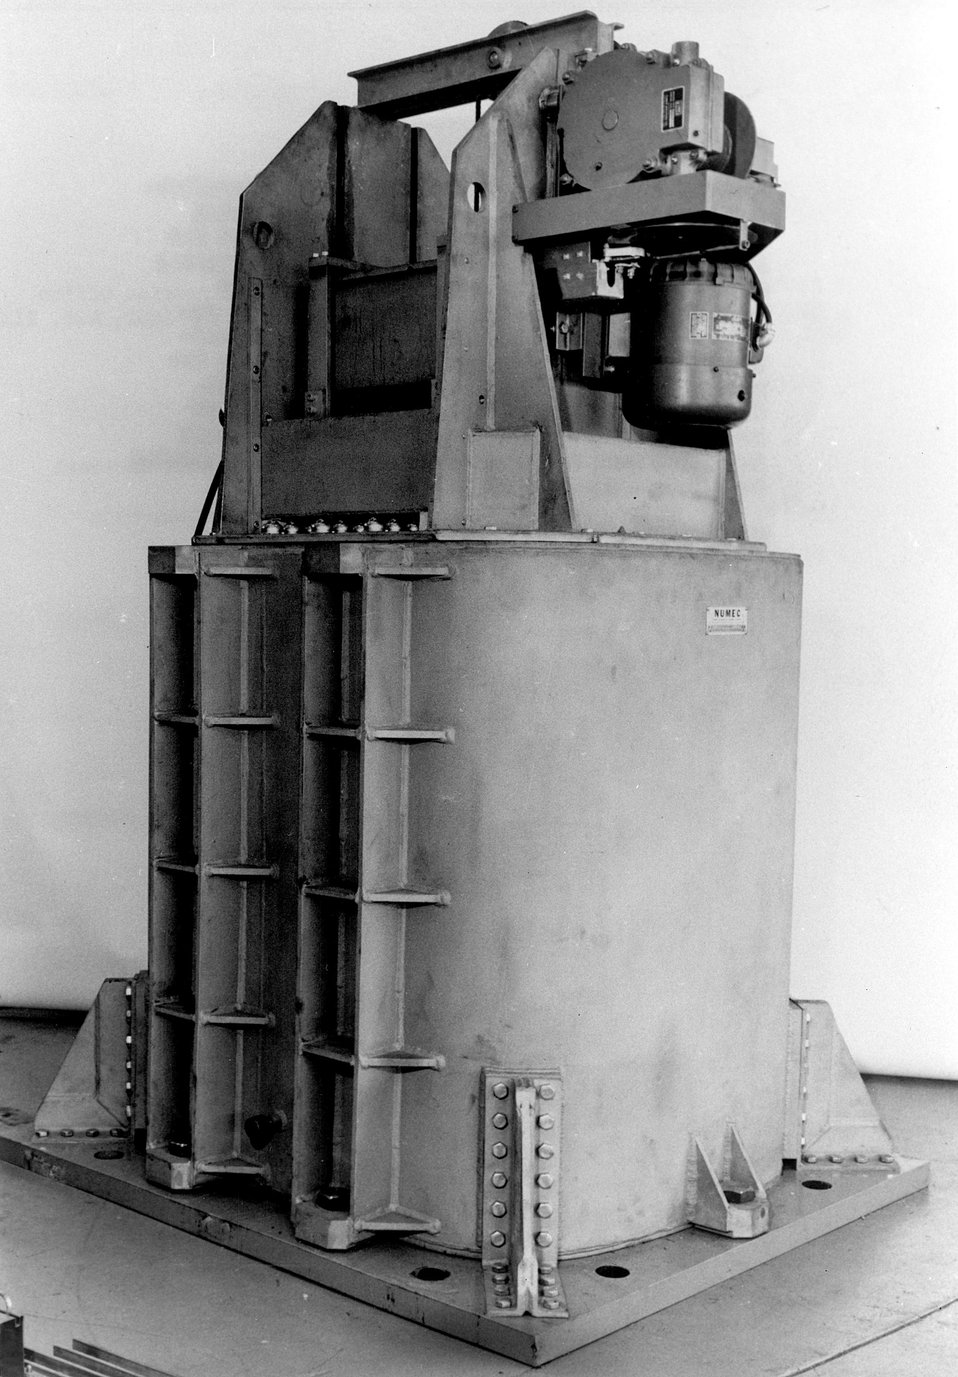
The feasibility of irradiating fish as a means of extending the commercial shelf-life has been demonstrated and the Food and Drug Administration has been petitioned to approve six species of irradiation-processed fish for human consumption. c. 1967